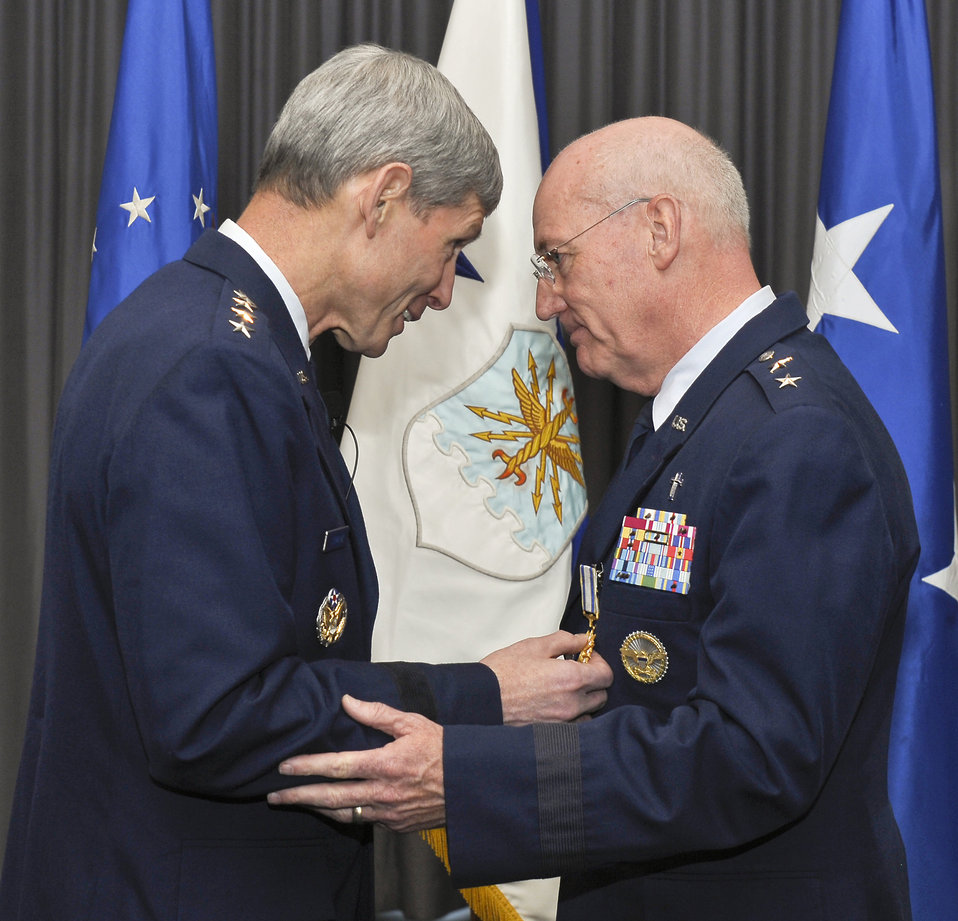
Top Air Force chaplain retires after 40-year career

Air Force Chief of Staff Gen. Norton Schwartz congratulates Maj. Gen. Cecil Richardson during his retirement ceremony April 30, 2012, at Joint Base Anacostia-Bolling, D.C. Richardson was the Air Force Chief of Chaplains at the time of his retirement.